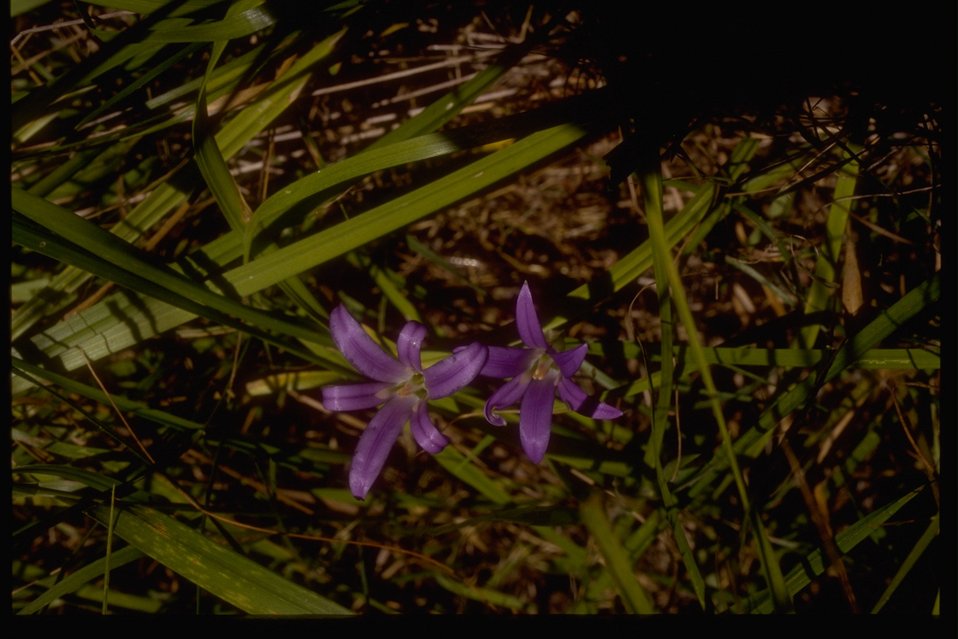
Wildflowers near Steens Mountain.